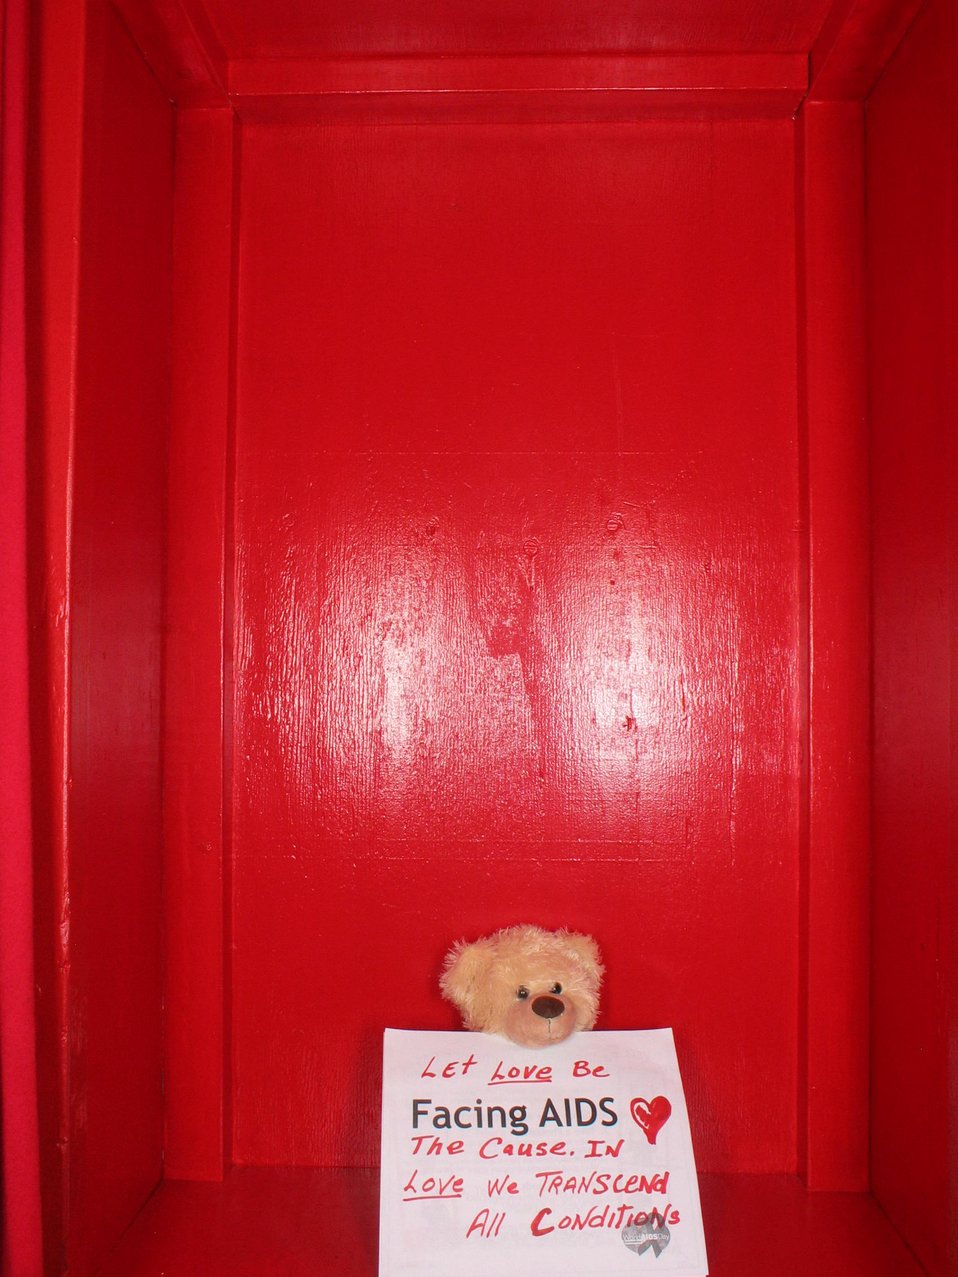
Let love Facing AIDS be the cause. In love we can transcend all conditions.